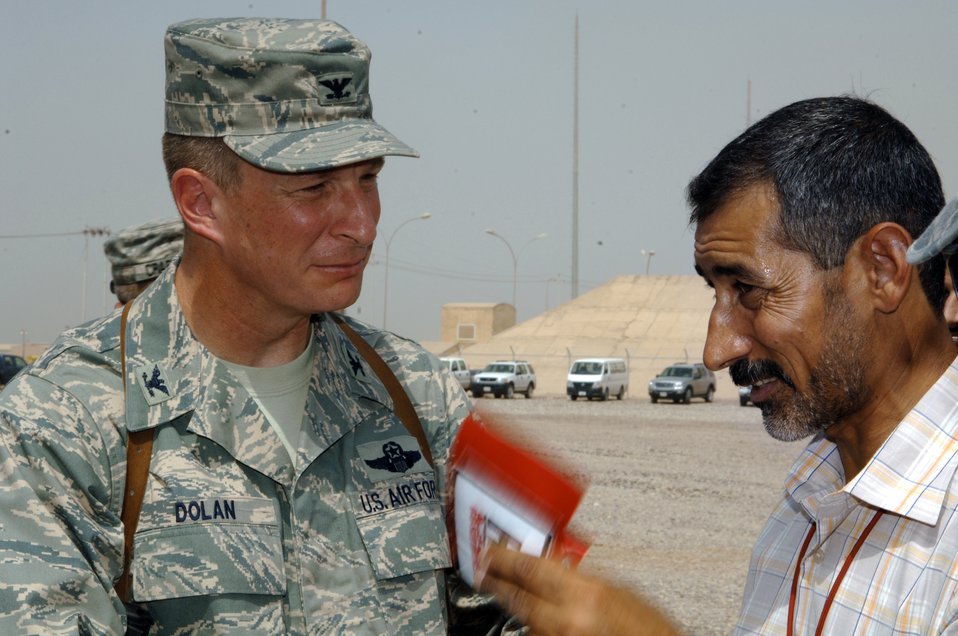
Iraqis sign container contract with Joint Base Balad

Col. John Dolan speaks with Hashim Abd Al-Amir Mahdi of the Miran Co. after a ribbon-cutting ceremony to mark the opening of an Iraqi-based Industrial Zone Aug. 21 at Joint Base Balad, Iraq. The Miran Co. is establishing an I-BIZ business on base that will create approximately 70 jobs for Iraqis within six months. Colonel Dolan is the 332nd Air Expeditionary Wing vice commander.